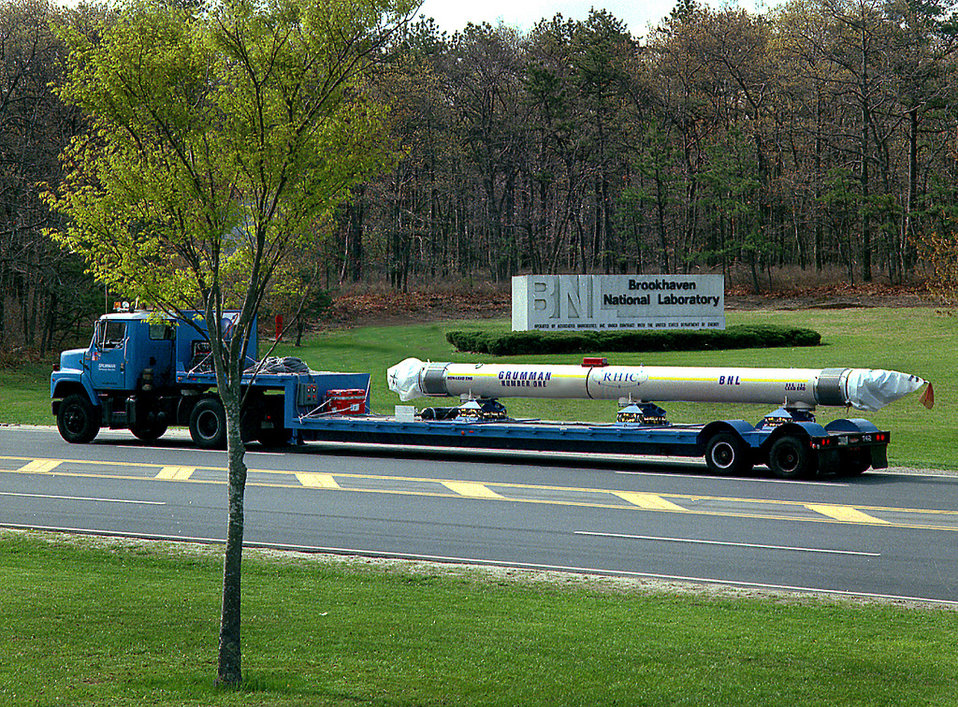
The first superconducting magnet for Brookhaven National Laboratory's Relativistic Heavy Ion Collider ( RHIC) is delivered in 1994.